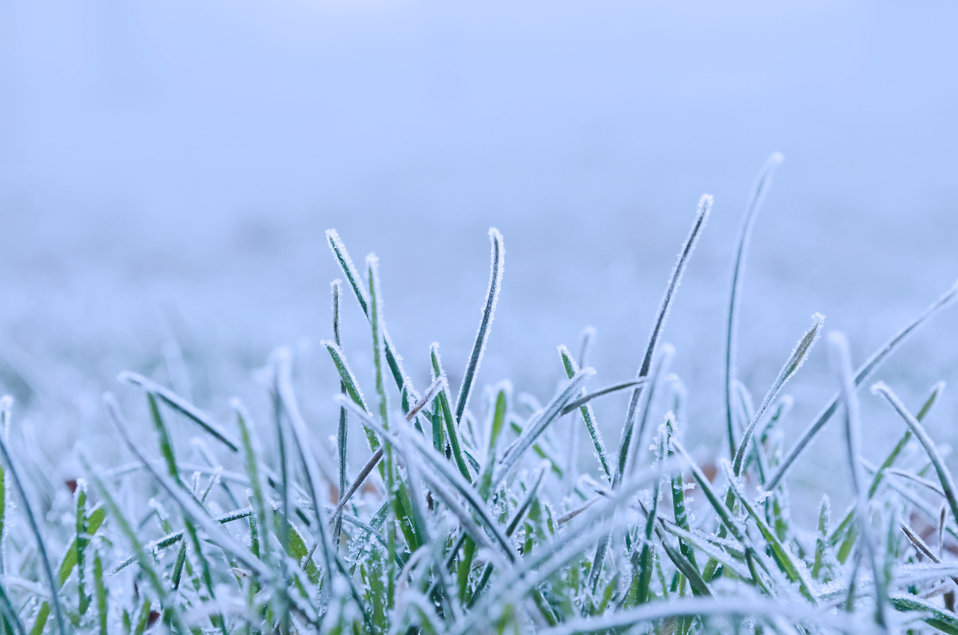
Frozen grass.